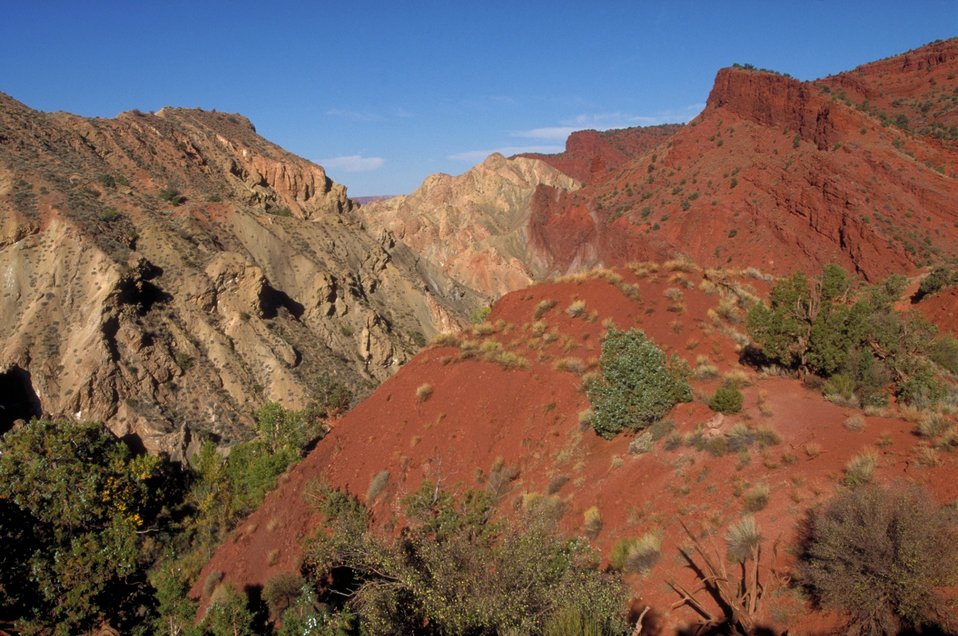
Multi-colored rock in Onion Creek area near Moab, Utah.